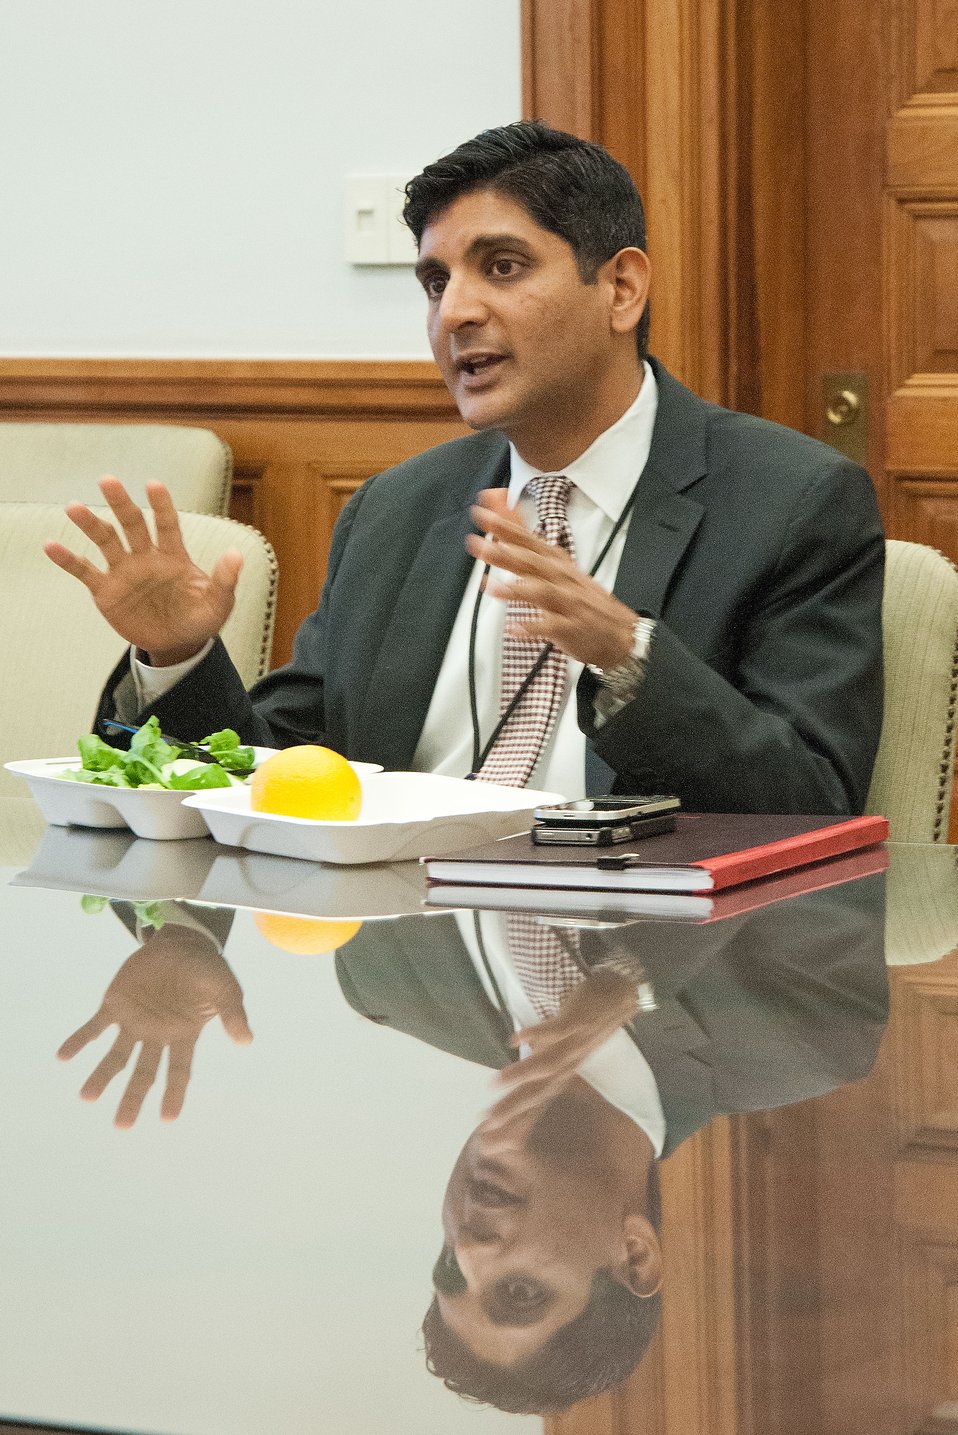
Ven Neralla, National Institute of Food and Agriculture had the opportunity with other United States Department of Agriculture employees to discuss the roles they play within the department at a Brown Bag Lunch held with Agriculture Secretary Tom Vilsack in Washington, D.C., on Wednesday, July 25, 2012. Secretary Vilsack holds Brown Bag Lunches to discuss the role United States Department of Agriculture employees play and to thank them for their dedication and diligence.